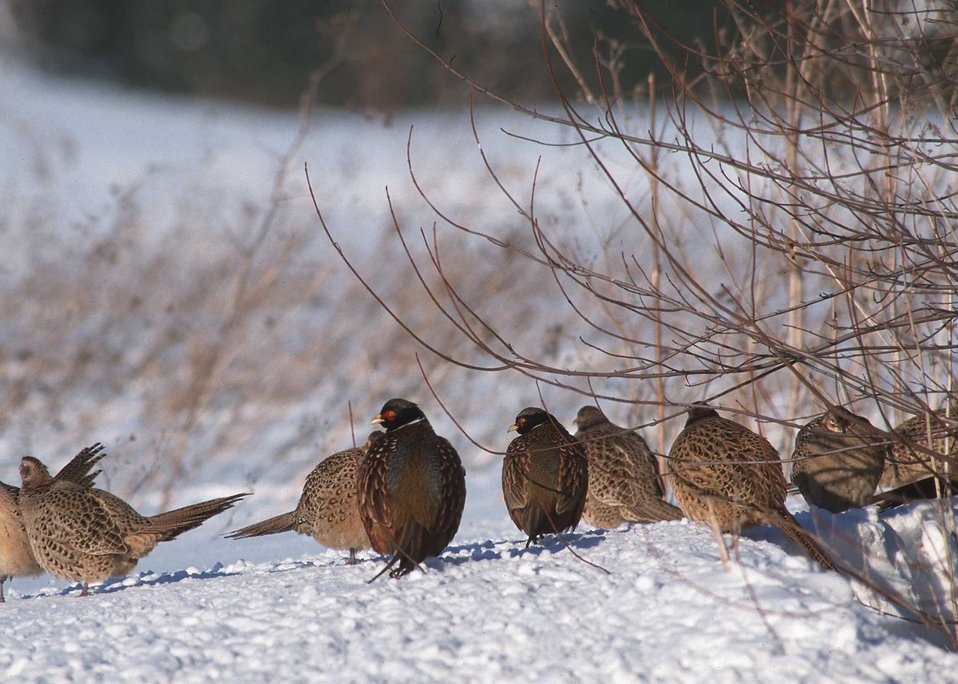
Pheasants and other wildlife species need both food and cover in harsh Iowa winters. It is provided by landowners with both annual and perennial plantings.